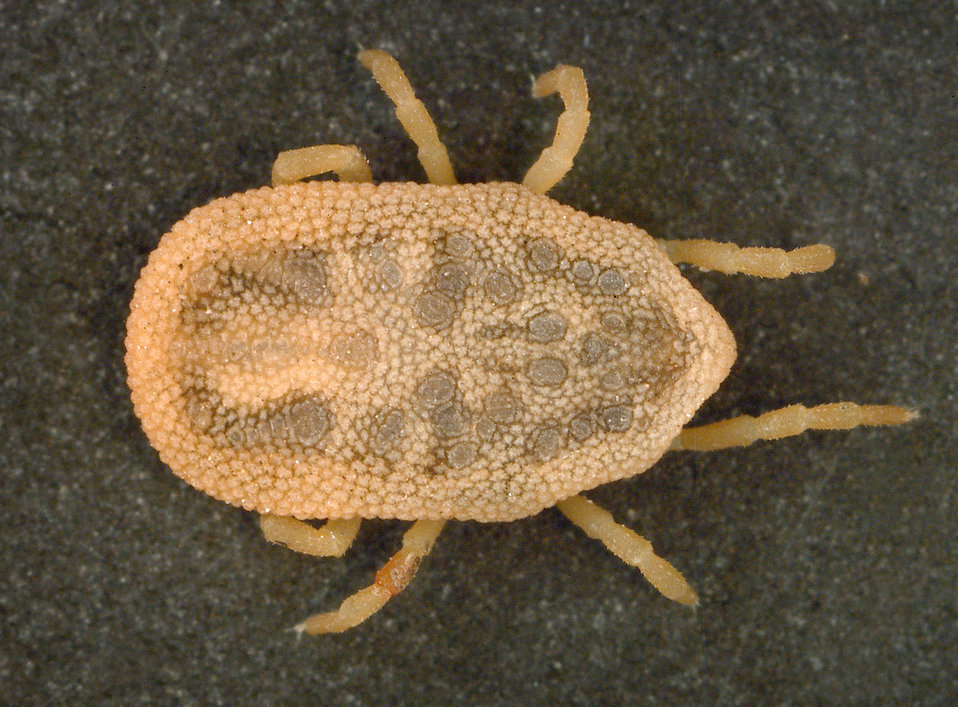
This is a dorsal view of the 'soft tick' Carios kelleyi, formerly Ornithodoros kelleyi, or the 'Bat Tick'.